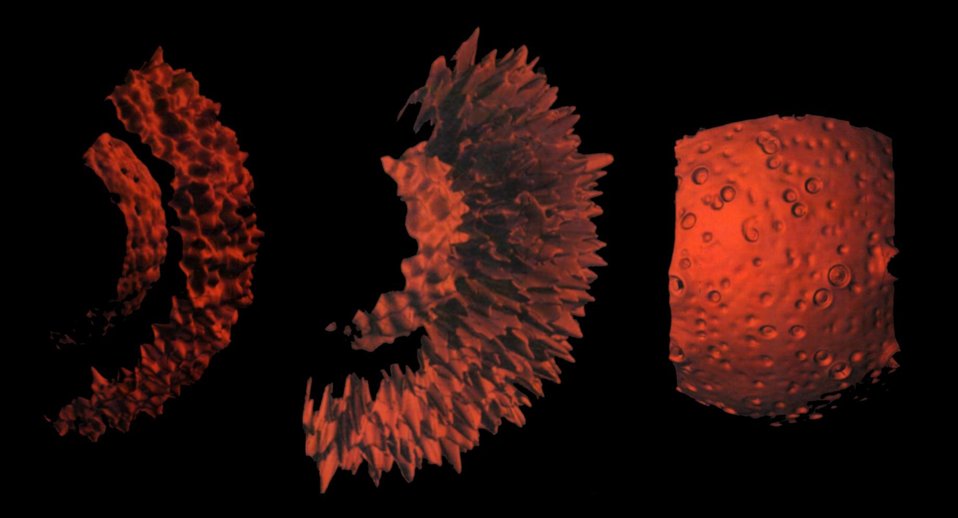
EXAMPLE OF ASCI (ACCELERATED STRATEGIC COMPUTING INITIATIVE) WHITE 3D COMPUTER SIMULATIONS.

SHOWN ARE ISODENSITY SURFACES OF A NATIONAL IGNITION FACILITY (NIF) IGNITION CAPSULE BOUNDING THE SHELL, SHOWN AT 200 PICOSECONDS (LEFT) AND 100 PICOSECONDS (CENTER), AND NEAR IGNITION TIME (RIGHT).